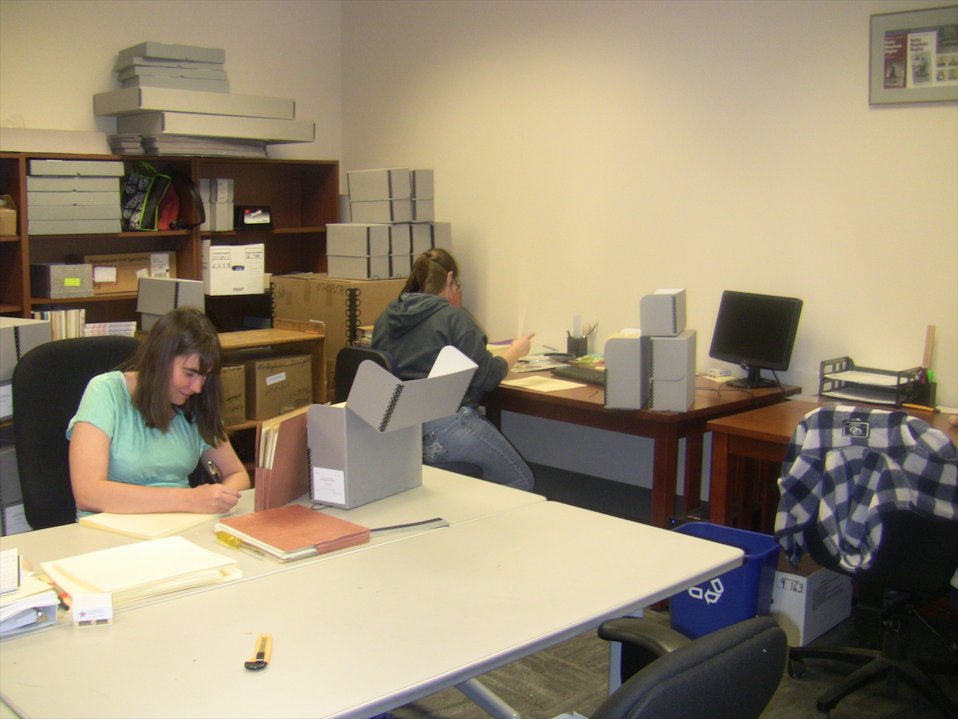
Denise Ruminski and Jennifer Bonde performing holding maintainceDenise Ruminski and Jennifer Bonde performing holding maintaince; Location: National Archives at Denver, Broomfield, CO